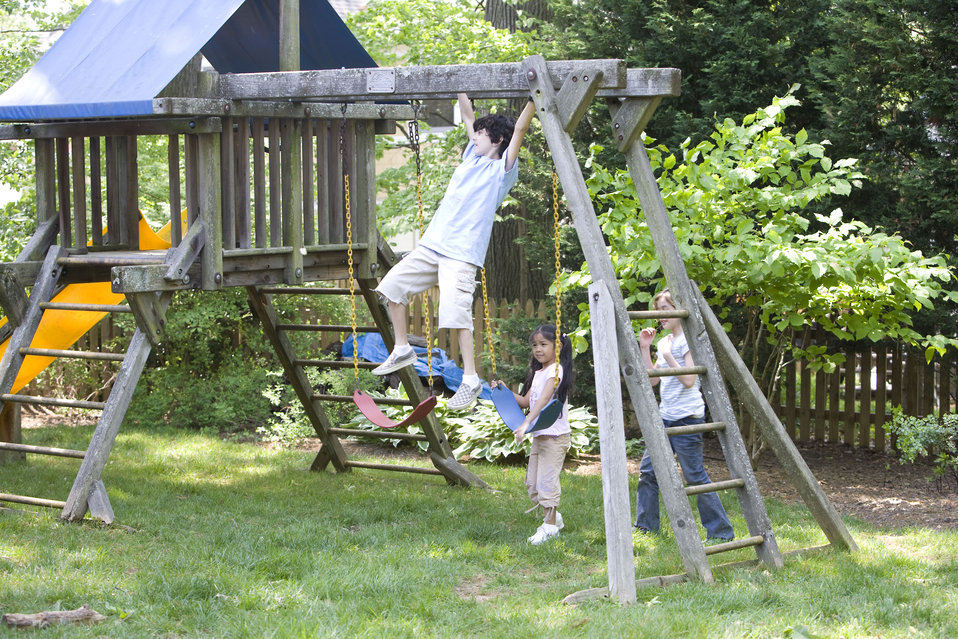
Children love playing outside, and these children were thoroughly enjoying their wooden swing set, and all were having fun in the fresh outdoor air, and the beautiful weather. It's important to note that older wooden playsets may have been treated with arsenic and/or creosote, and therefore, parents need to know if these chemicals were used in their manufacture.